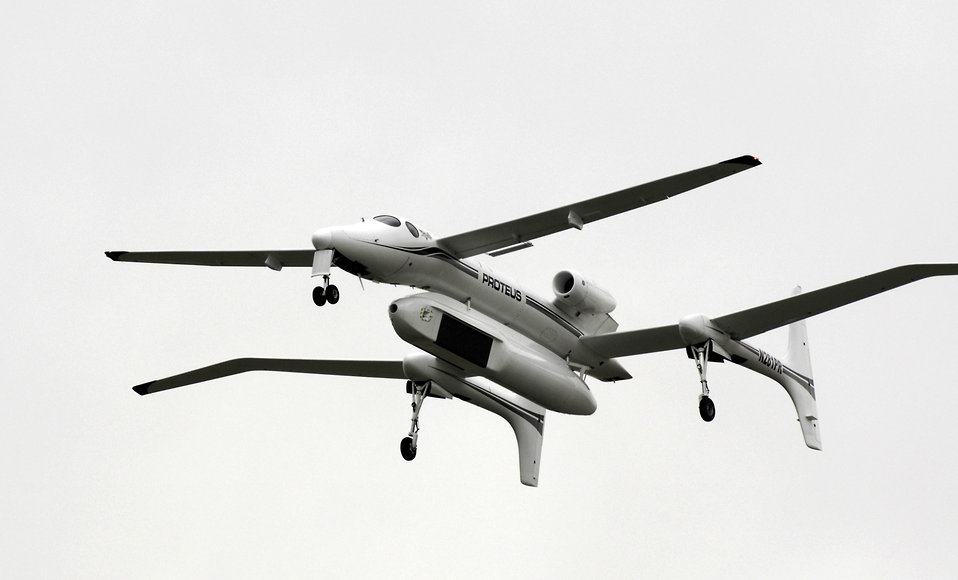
Next-generation radar to undergo testing aboard Proteus

Proteus takes off from Mojave Airfield near Edwards Air Force Base, Calif., on Thursday, April 27, 2006. It carries the pod that eventually will contain the MP-RTIP radar that will be used on the Global Hawk unmanned aerial vehicle. A year of testing will begin in September once the radar is installed on Proteus.